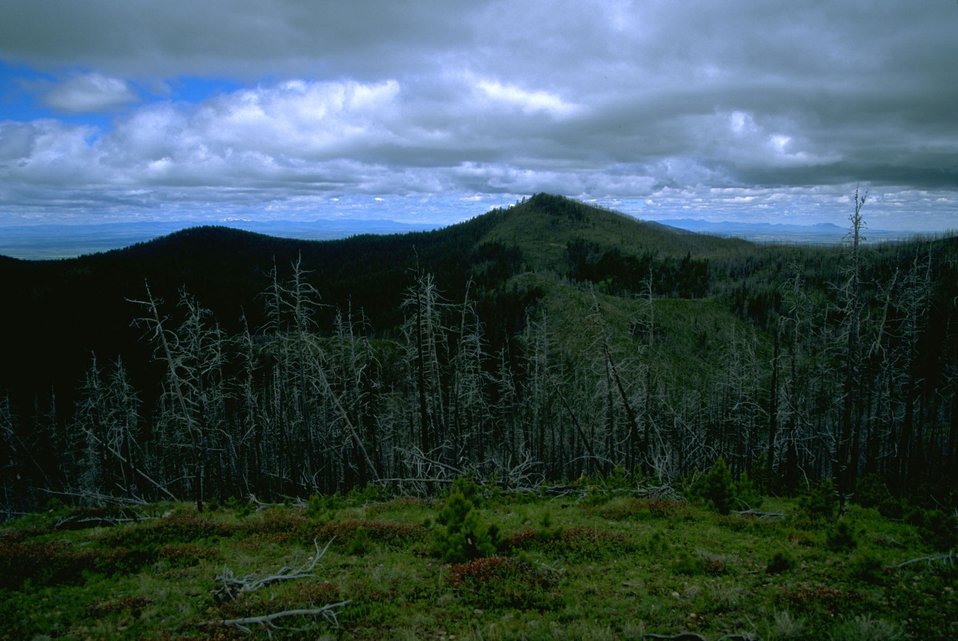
Dead trees in the evening light in the Judith Mountains